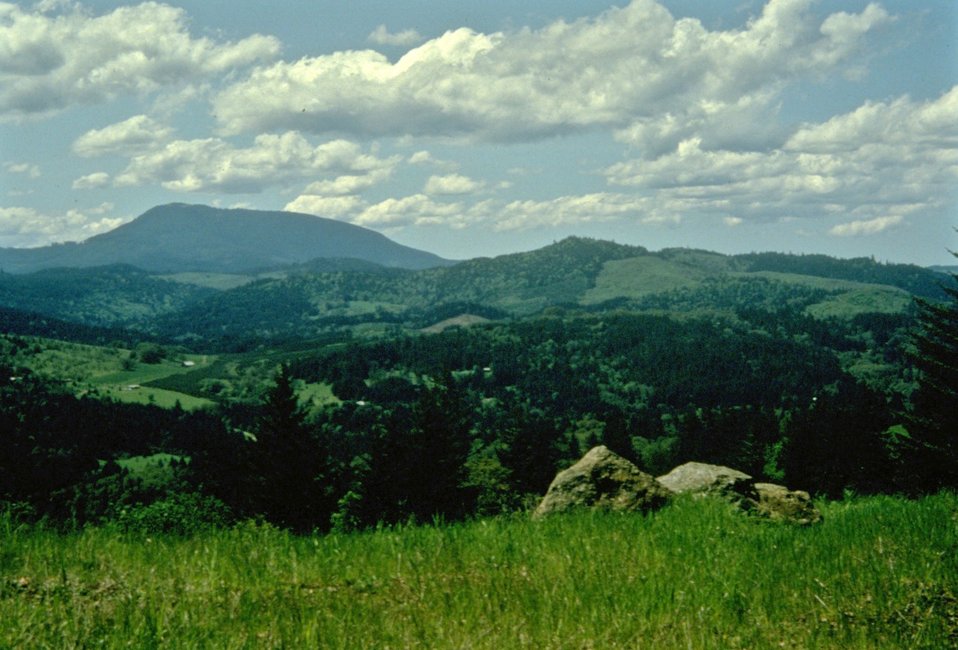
Scenic view of Mary's Peak.